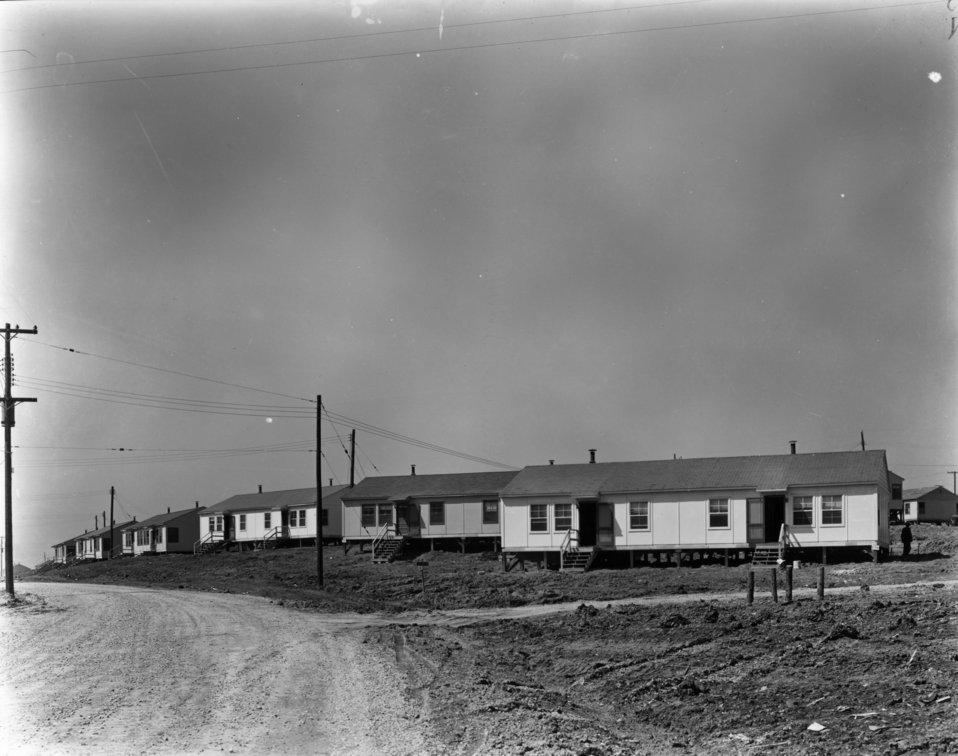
Housing at Oak Ridge